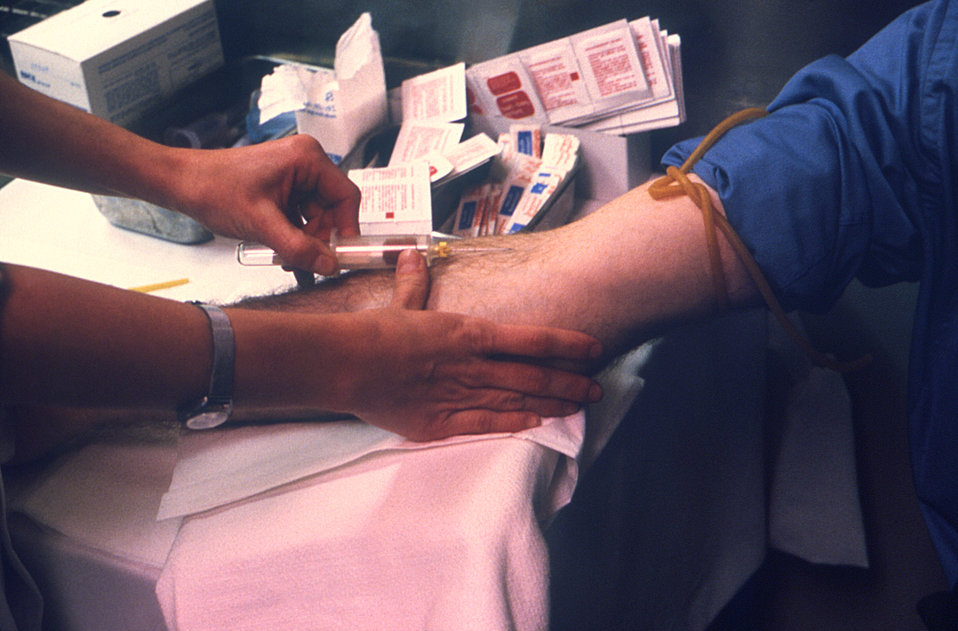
This phlebotomist was in the process of extracting a blood sample from a field-study volunteer's right antecubital fossa, during a 1979 Legionnaires' disease epidemiologic investigation.